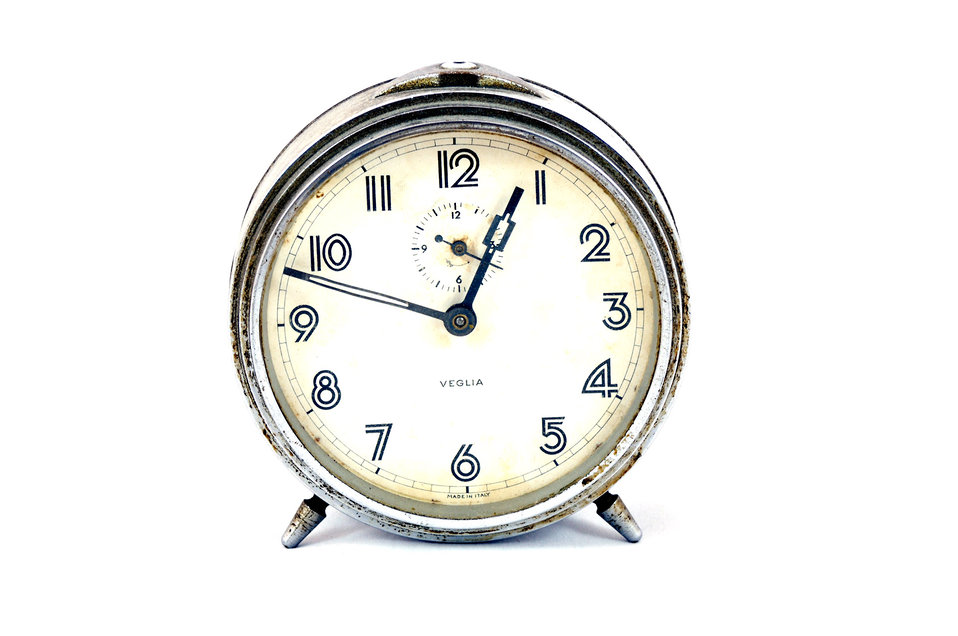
Old alarm clock

Alarm clock antique table.